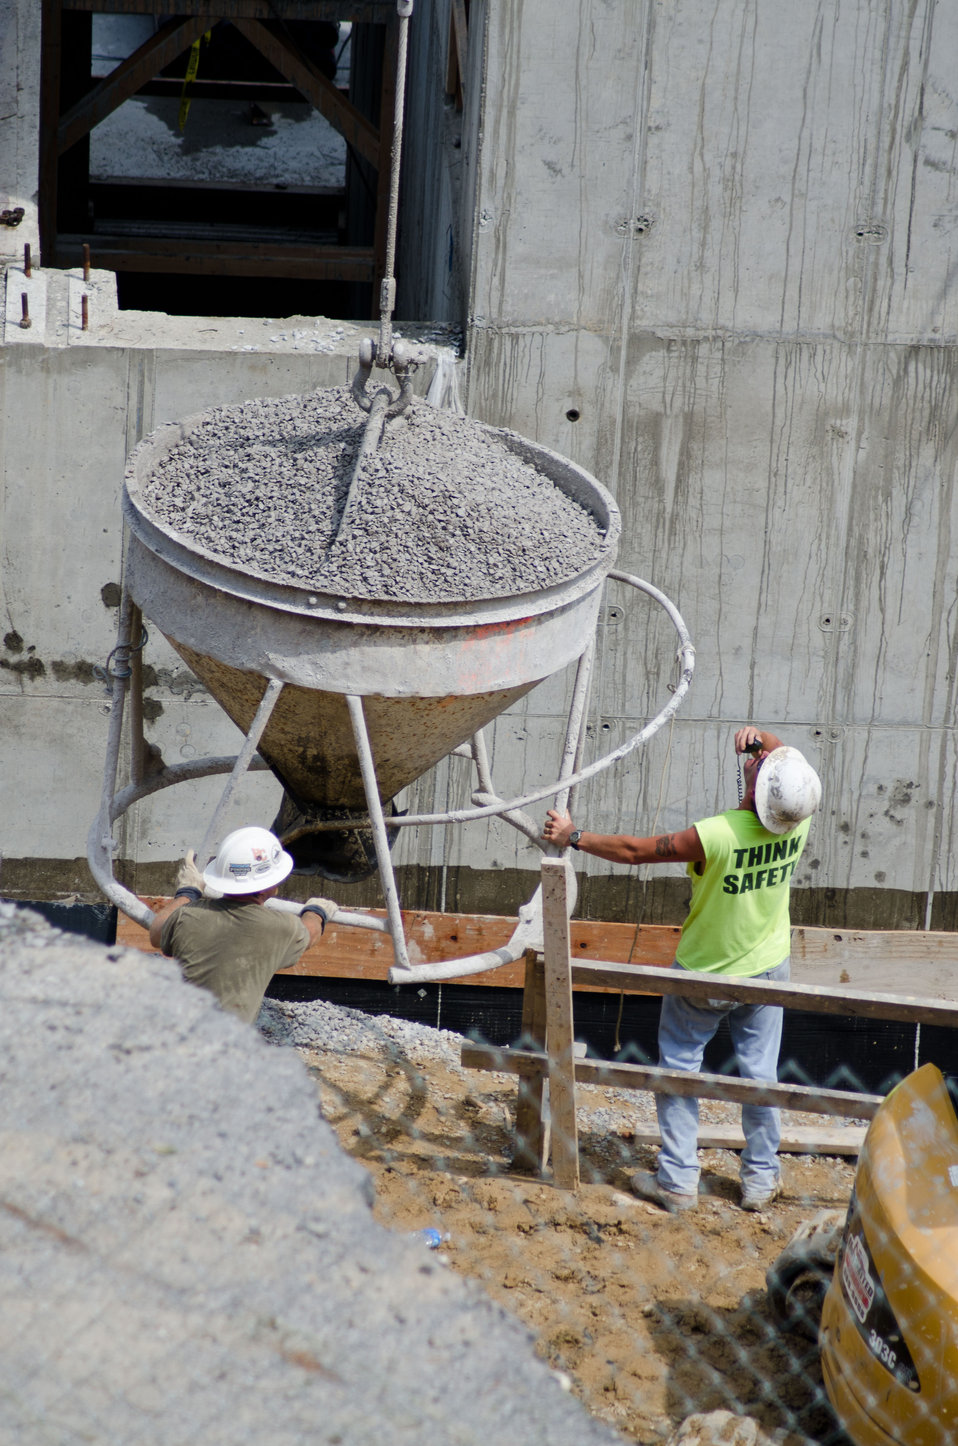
A rigger radios instructions to the crane operator, high above elevator shafts (gray), the core structures of the $25 million expansion project at University of Pikeville Kentucky College of Osteopathic Medicine (UP-KYCOM), Pikeville, KY on Tuesday, July 12, 2011.